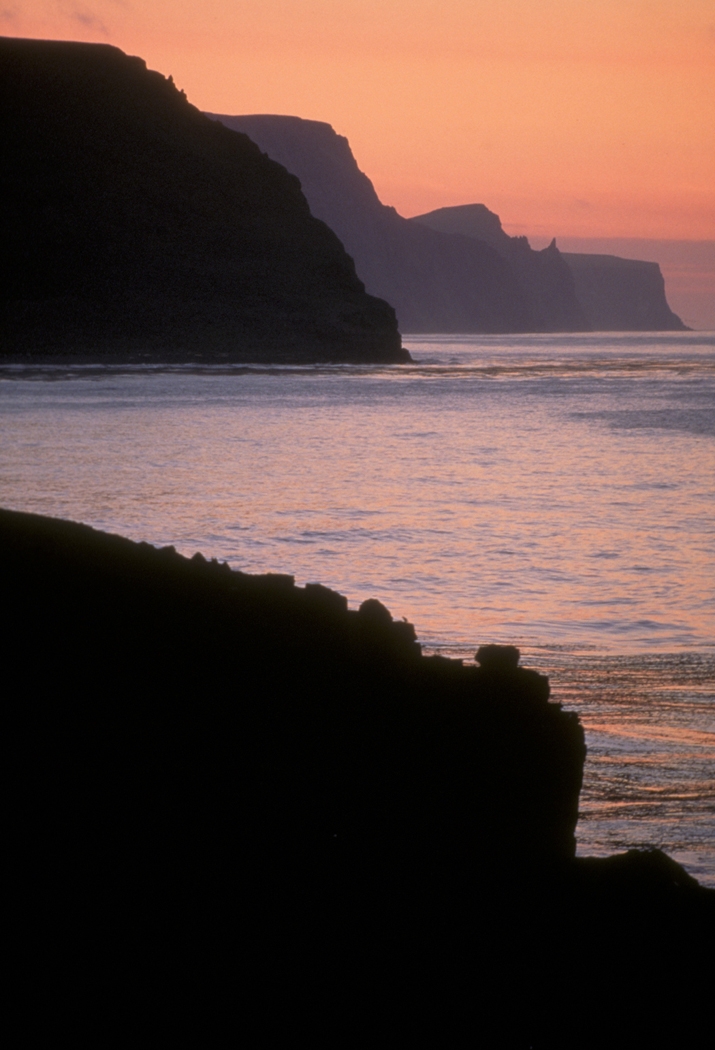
Pribilof sunset, Alaska Maritime NWR

A sunset adds drama to the high bluffs of St. George Island, one of the Pribilof Islands in the Alaska Maritime National Wildlife Refuge.